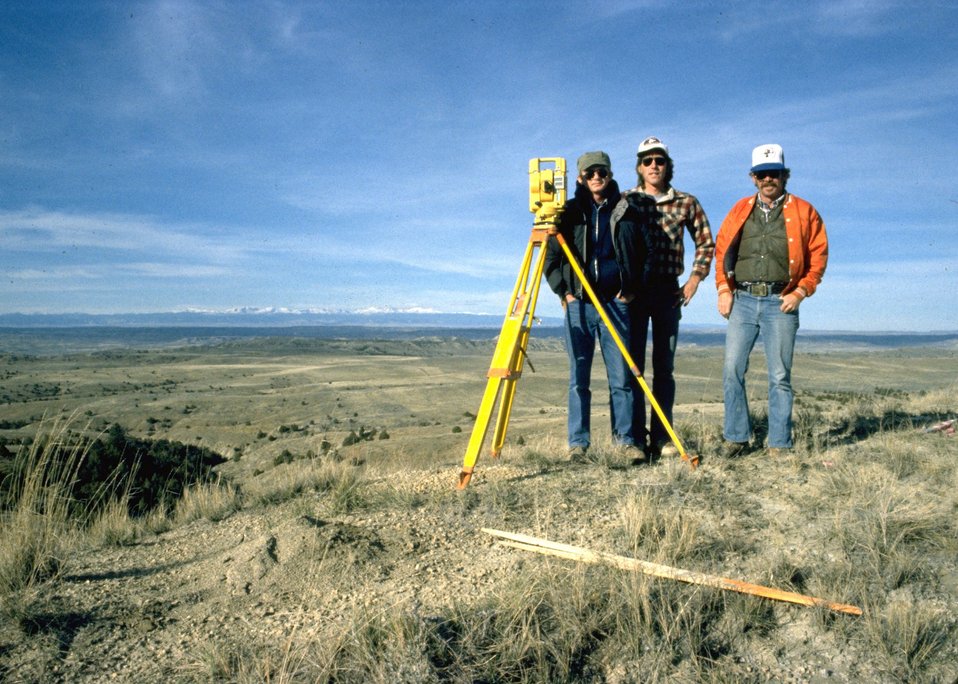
Surveying an unknown area.